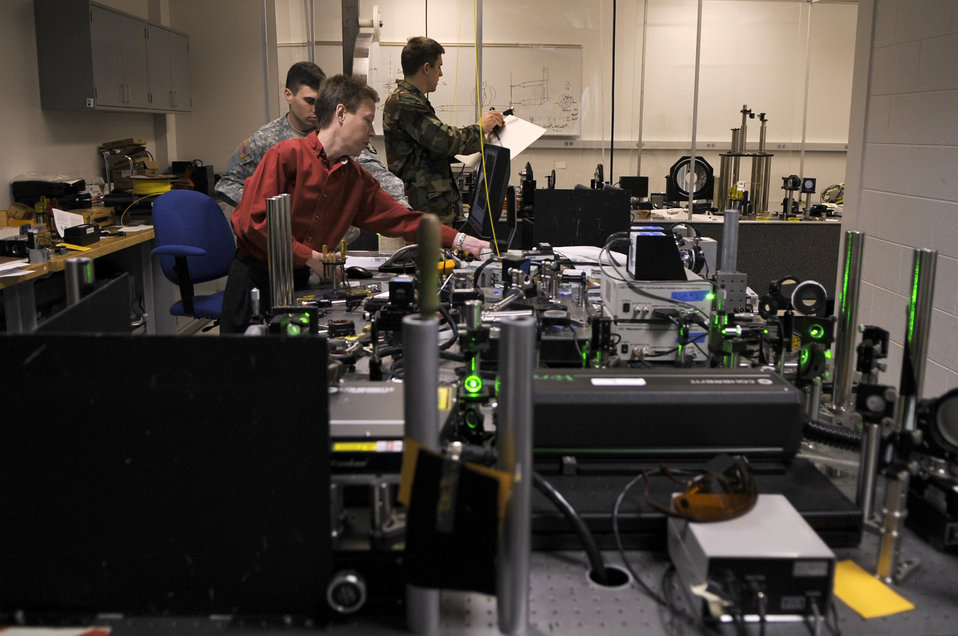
Academy researcher develops satellite imaging technology

Dr. Geoff Andersen conducts holographic adaptics optics research with U.S. Military Academy Cadet Richard Carter and U.S. Air Force Academy Cadet Will Holmes Jan. 22 at the Academy in Colorado. Dr. Andersen is a research associate, teaches cadets and conducts experiments at the Laser and Optics Research Center. Cadet Carter is a junior in a exchange unit from West Point and Cadet Holmes is a senior at the Academy.